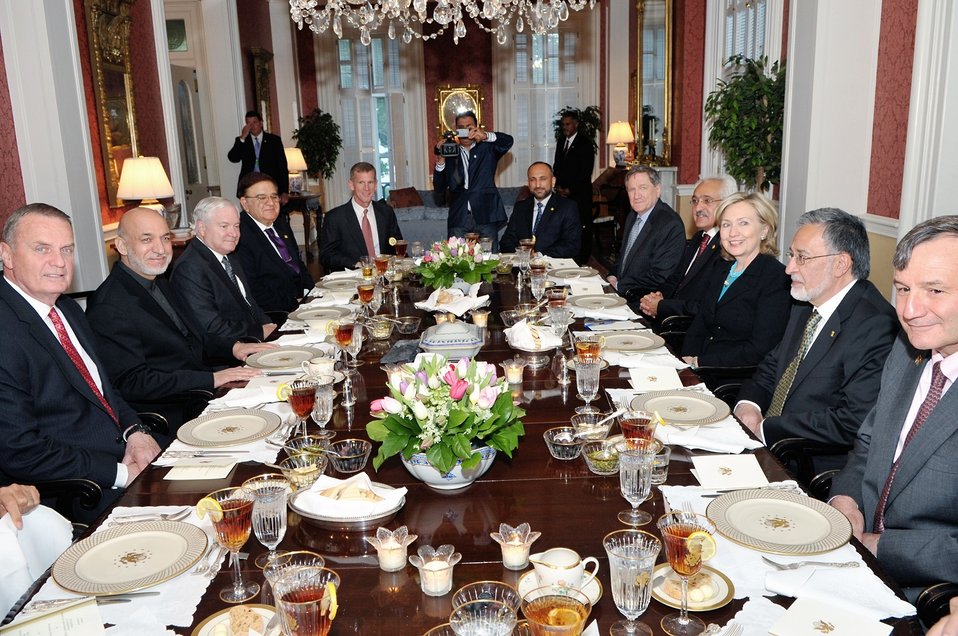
Secretary Clinton Hosts Dinner for Afghan President Karzai

U.S. Secretary of State Hillary Rodham Clinton hosts a dinner in honor of President of the Islamic Republic of Afghanistan Hamid Karzai at the Blair House, Washington, D.C., May 10, 2010.